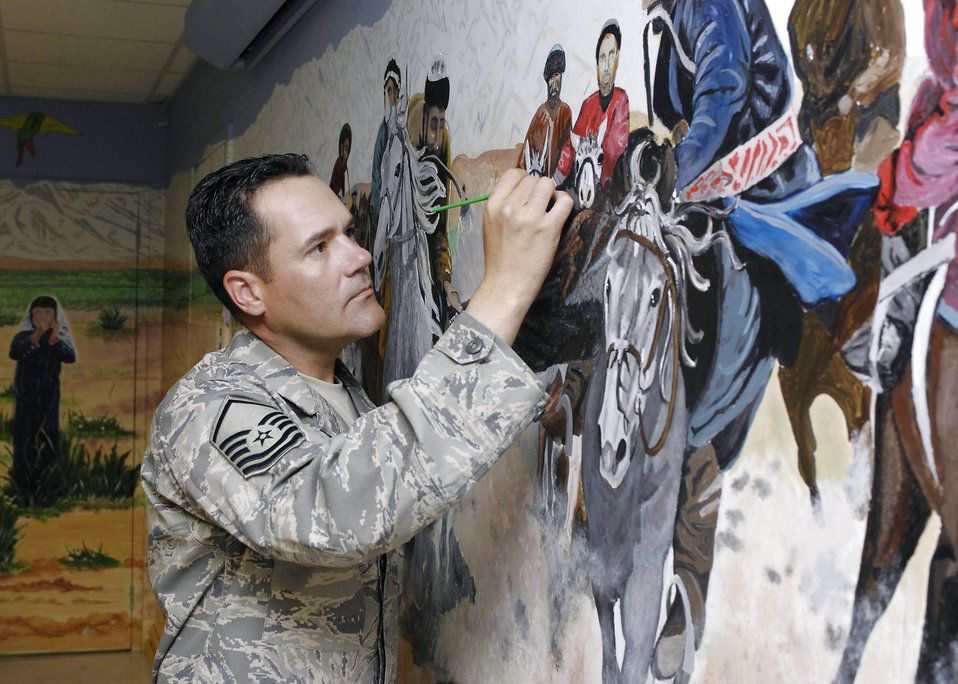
Art of War

Master Sgt. Albert Greig performs some final touch ups on a mural he and 38 other artist painted in the hospital conference room at Bagram Air Base, Afghanistan, April 24. The mural featured local culture and a panoramic view of the mountains near Bagram AB. Sergeant Greig is the Craig Joint Theater Hospital medical logistics superintendent.